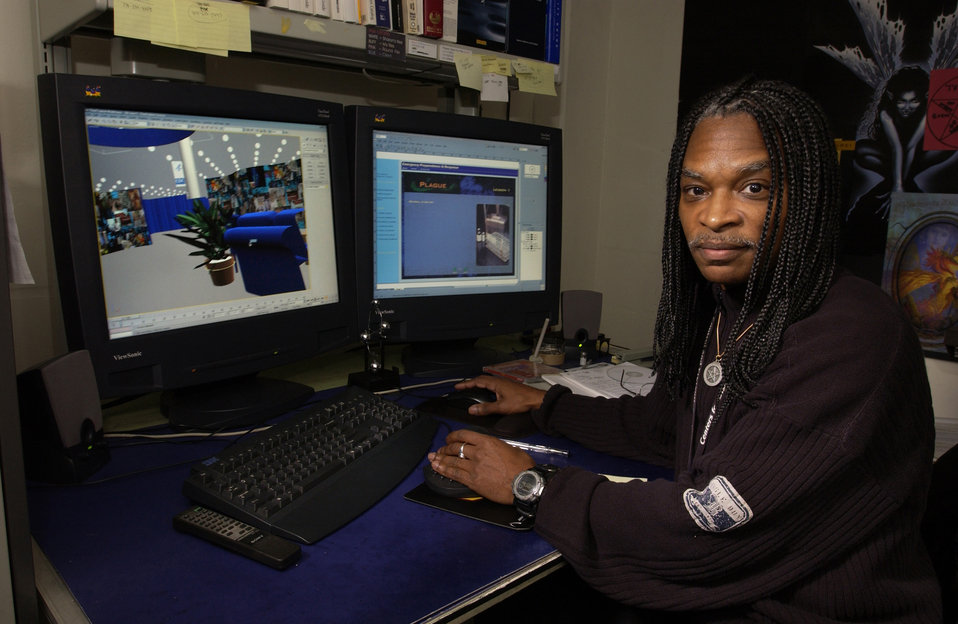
This is DPDE designer, Bob Hobbs, creating the CDC's 2003 APHA conference exhibit layout.